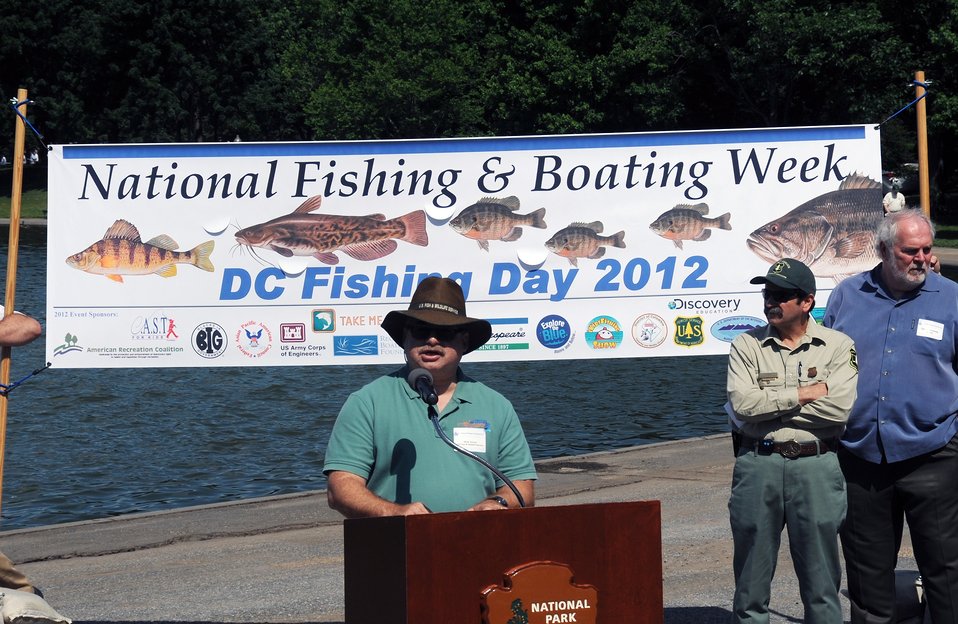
The importance of conservation

Bryan Arroyo, Assistant Director for Fish and Habitat Conservation, explained the importance of learning about conservation efforts